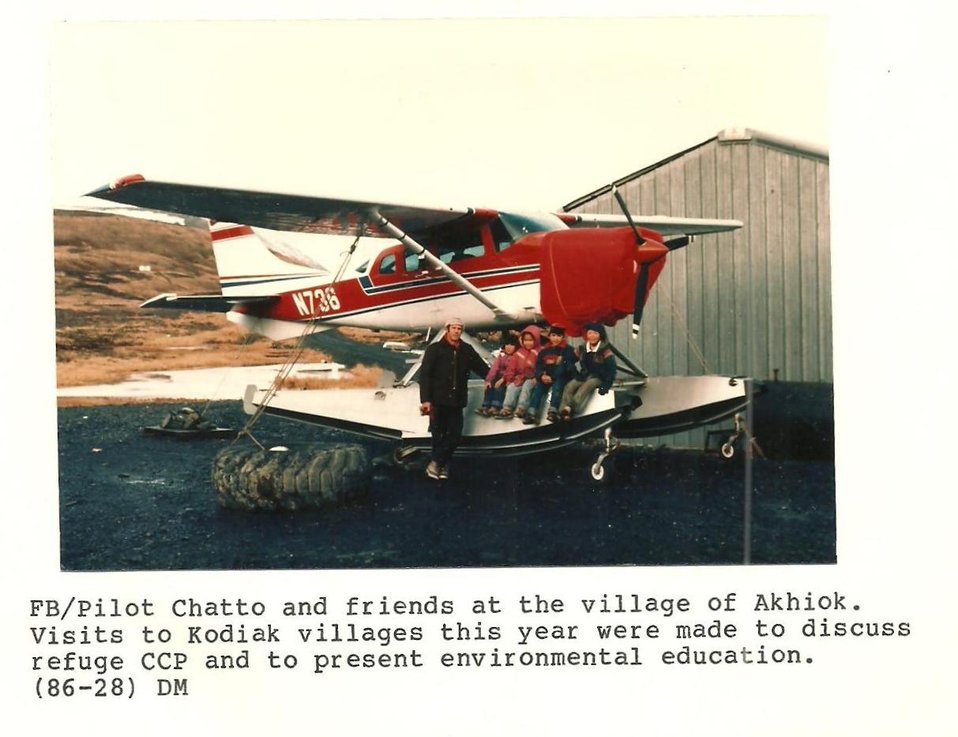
(1986) Kids on Float

Credit: USFWS

Source and Contact: Kodiak National Wildlife Refuge